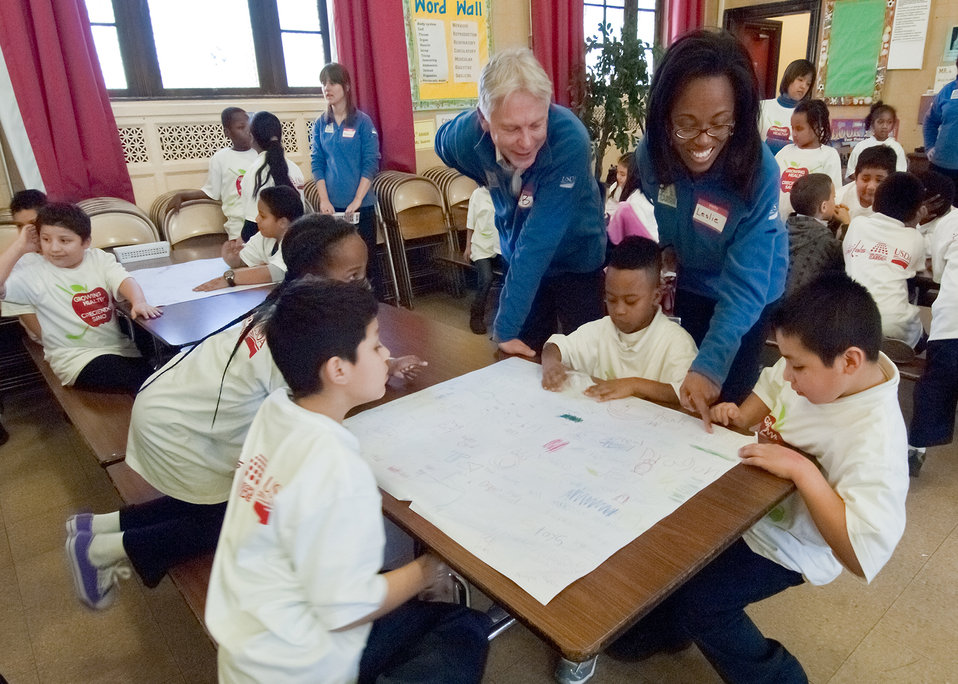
Robert Snieckus, United States Department of Agriculture, Landscape Architect (left) and Leslie Burks, Project Manager, United States Department of Agriculture, The People’s Garden listen to the description of Design Team “G’s” garden design at Diana Suarez and Kirsten Kaittunek’s first grade class at Powell Elementary School in Washington, D.C., Thursday, February 10, 2011.